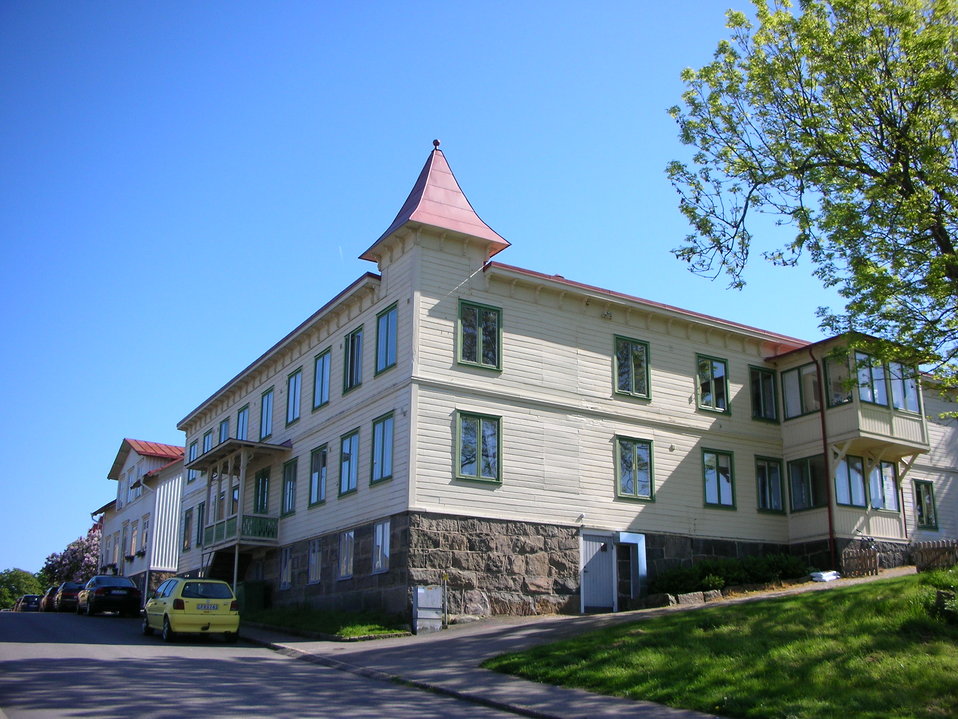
Svenska: 'Slottet' på Platsarna i Varberg.